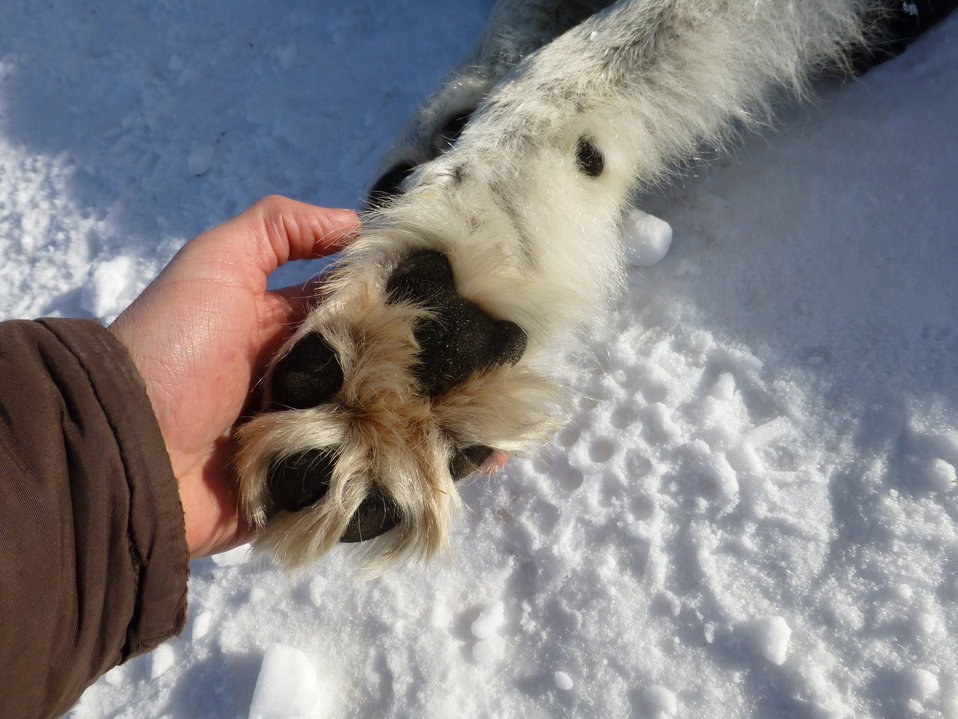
My, What Big Feet You Have

In addition to adding collars and noting each wolf's age and size, refuge personnel assessed the overall condition of the wolves. Here, Refuge Biologist Eric Cole looks at one of the animal's pads. The biologist's hand gives the size of the wolf's foot some perspective.

Credit: USFWS / Tim Pratt, biology volunteer